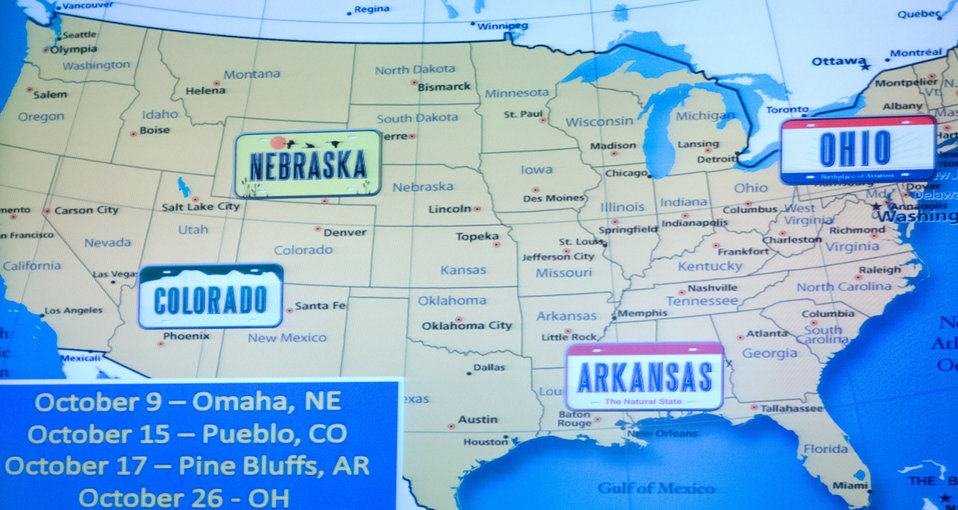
Agriculture Secretary Tom Vilsack talks about the great value of upcoming forums that will be held at four locations across the nation during a meeting of the White House Rural Council at the White House in Washington, D.C. on Friday, Oct. 5, 2012. The White House Rural Council discusses recent White House announcements and Secretary Vilsack asked council members to outline their work plan for the coming months.